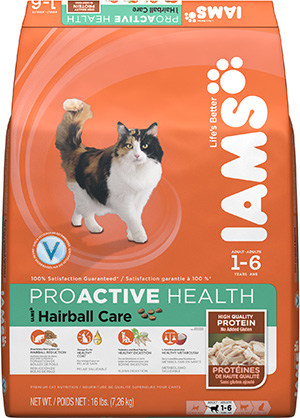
RECALLED – Dog and Cat foods - Dry

August 14, 2013 – Product Recall – P&G Voluntarily Recalls Limited Quantity of Dry Pet Food Due to Possible Health Risk.